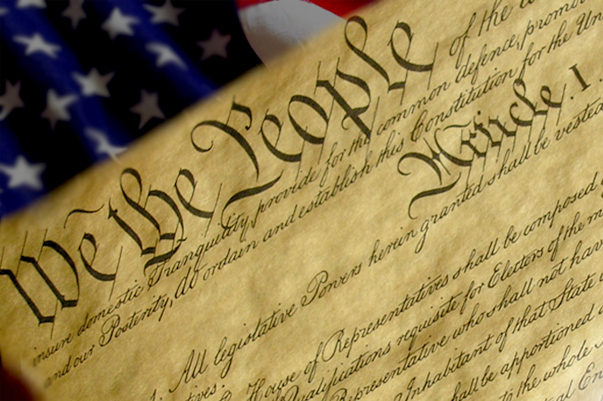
US Constitution

A graphic of the US Constitution with a flag background.